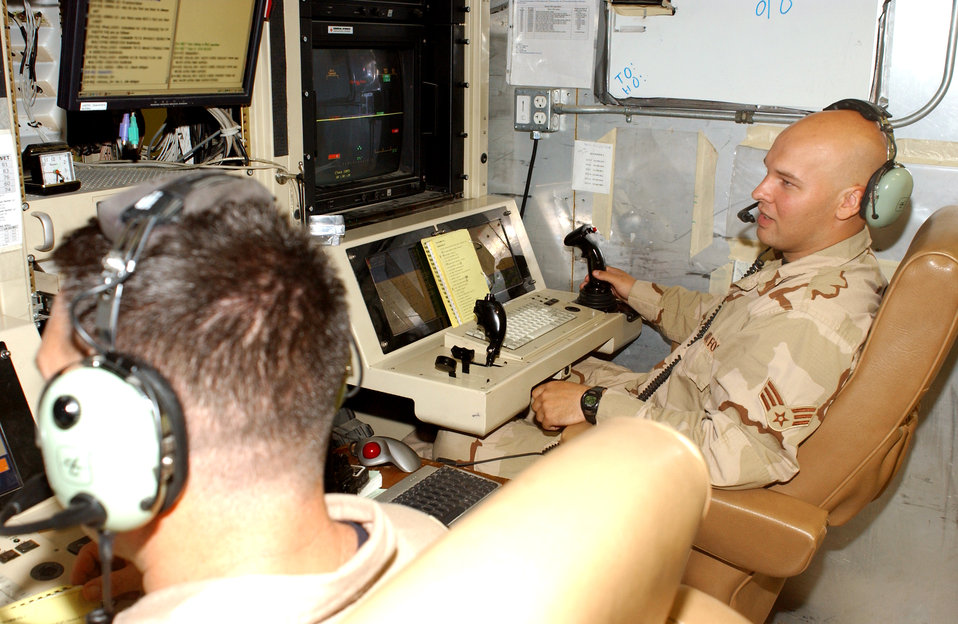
Predator operaters see whole picture

BALAD AIR BASE, Iraq -- Senior Airman Justin Warnack goes over preflight checks before a mission supporting Operation Iraqi Freedom.